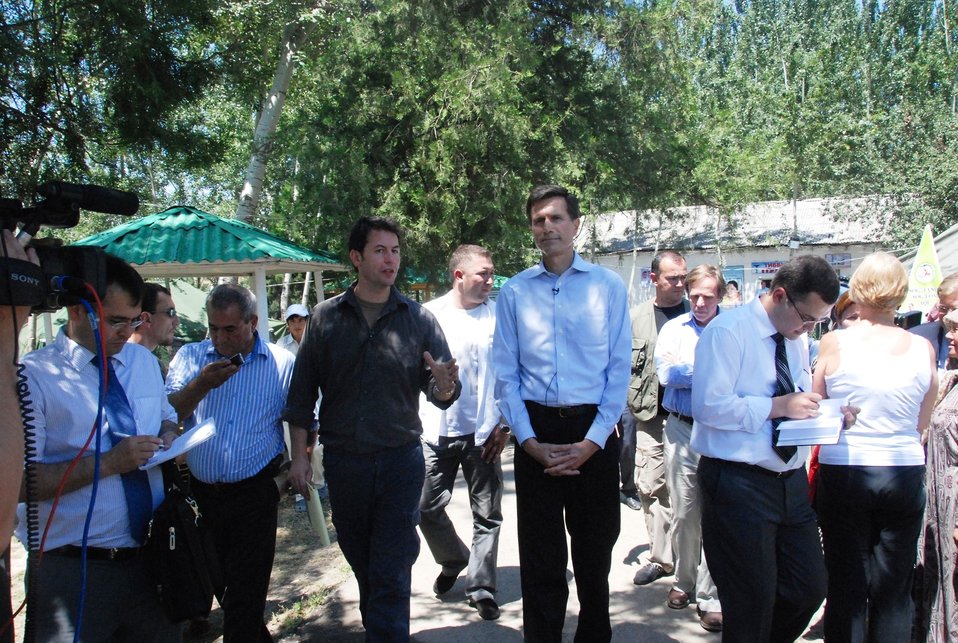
CNN's Matthew Chance Interviews Assistant Secretary Blake in Uzbekistan

U.S. Assistant Secretary of State for South and Central Asian Affairs Robert O. Blake is interviewed by CNN Reporter Matthew Chance in Tashkent, Uzbekistan, on June 17, 2010.